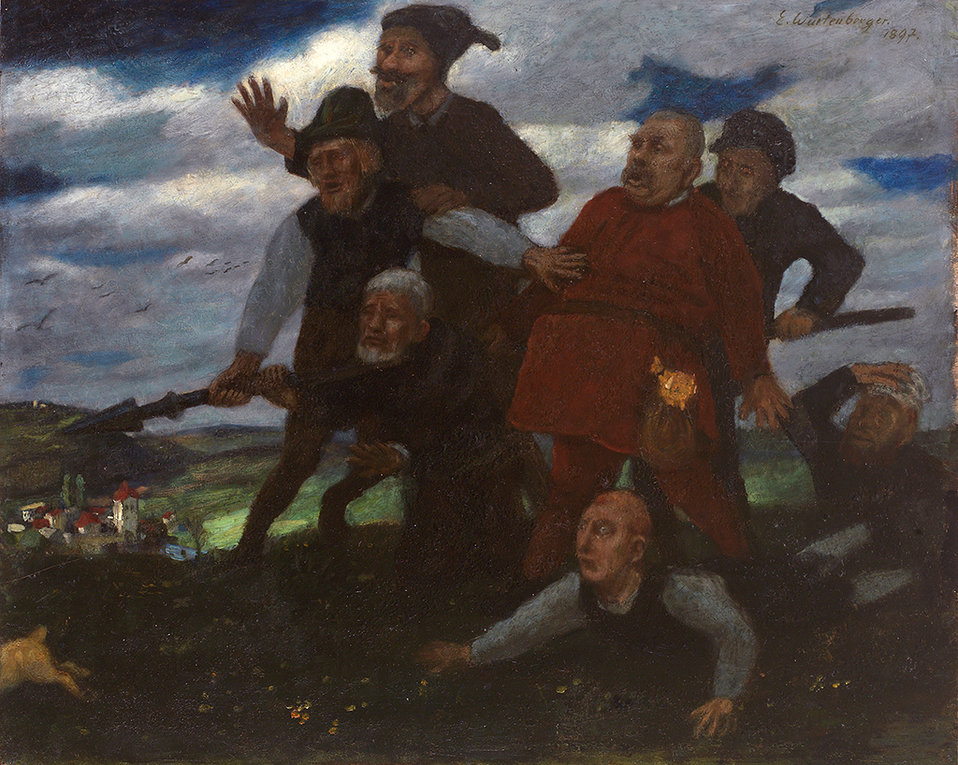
Die sieben Schwaben. Öl/Holz. 50 x 62 cm. Sign. und 1897 datiert.